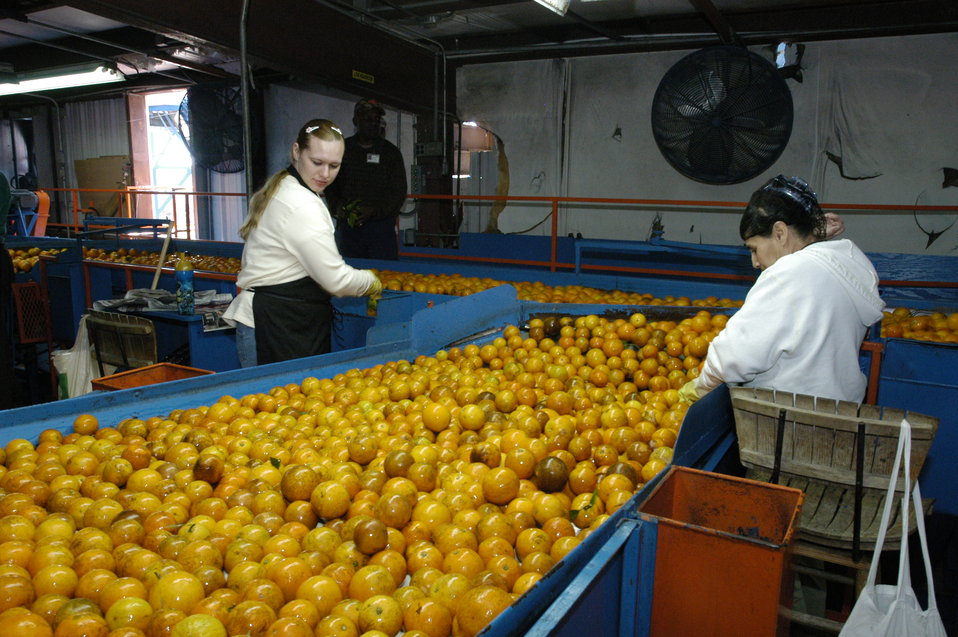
Oranges are processed at the Seald Sweet processing plant in Vero Beach, Florida on February 10, 2006. A trailer load of oranges is weighed on scales in order to determine the weight of fruit received, which will be used to base the payment to the grower. The oranges are unloaded onto a conveyor belt and from this belt the Florida Department of Agriculture and Consumer Services (FDACS) takes a representative sample to test it for juice content, maturity, and to certify the pounds solids per box (the unit that growers' payment is based upon). The fruit is then diverted to storage bins labeled according to the juice specification as determined by FDACS. The fruit is conveyed by belt through a washing process and enters the processing plant where it is graded for bad or damaged fruit. The fruit is then separated by size and sent to the juice extractors. Before juicing, the peel is pricked to extract the oils found in the peel and then the juice is extracted.